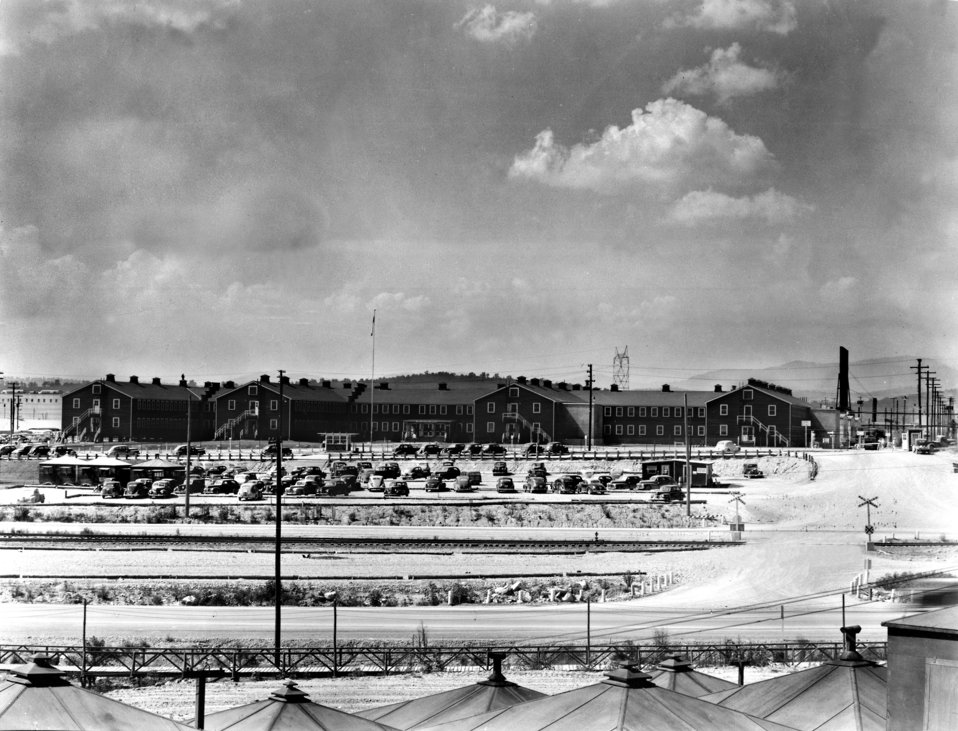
Administration Building K-1001 Oak Ridge

k-25-28-287 DOE photo Ed Westcott 7-23-1945 Oak Ridge Tennessee